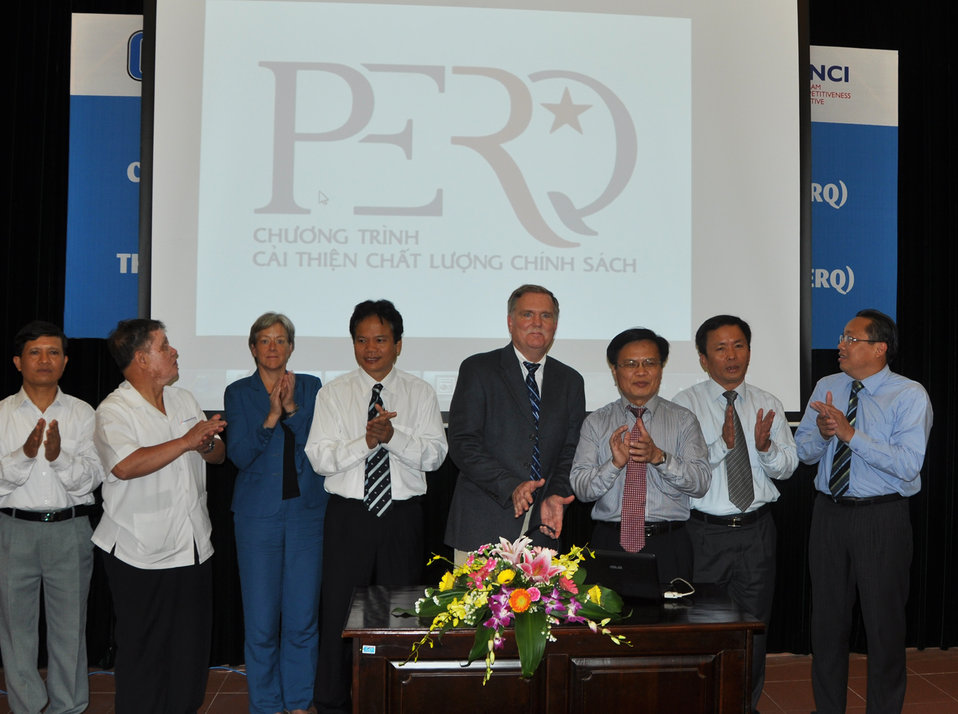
New public-public initiative in regulatory reform promotes growth: www.perq.vn

USAID contributes technical support for Vietnam's latest effort to promote effective regulatory impact assessment.